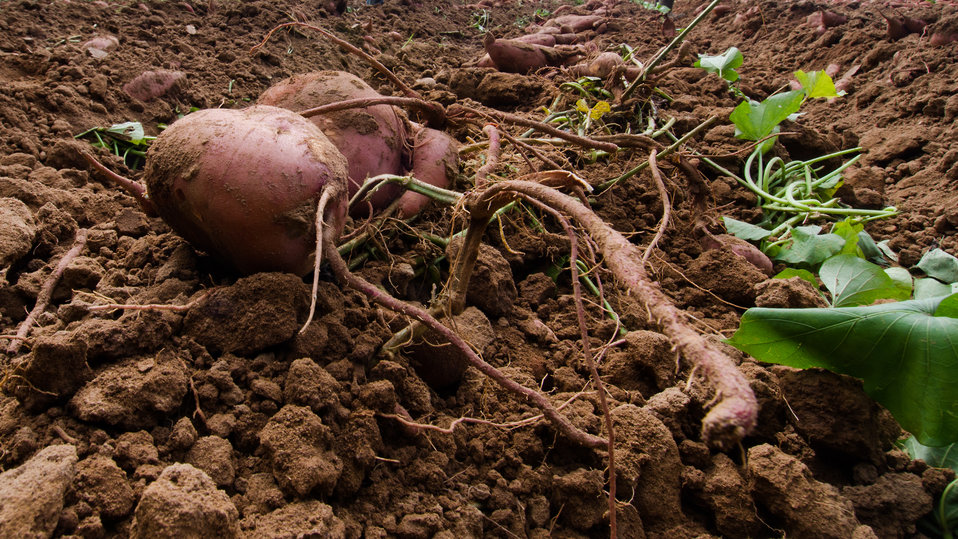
Harvested hand picked large sweet potatoes, at Kirby Farms in Mechanicsville, VA on Friday, Sept. 20, 2013. 200 acres of the farm are devoted to eggplant, spinach, beets, tomato, jalapeno peppers, melons and a variety of greens. Soybeans and small grain are grown on the remaining 300 acres. Using rotational crop practices allows Kirby Farms to double and triple crop yields. Wholesalers, who buy from this farm, sell the produce to major supermarkets in the Mid-Atlantic region, from North Carolina to Maryland. Restaurants in the local area prepare and serve the local bought produce to patrons in the Richmond, VA metropolitan area.